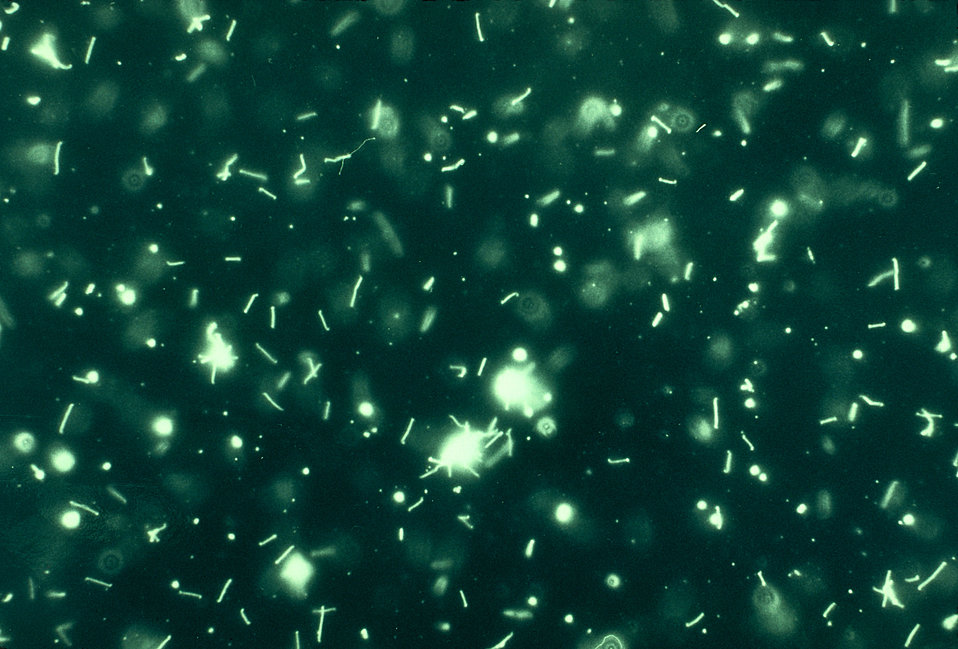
Photomicrograph of leptospiral microscopic agglutination test with live antigen using darkfield microscopy technique.